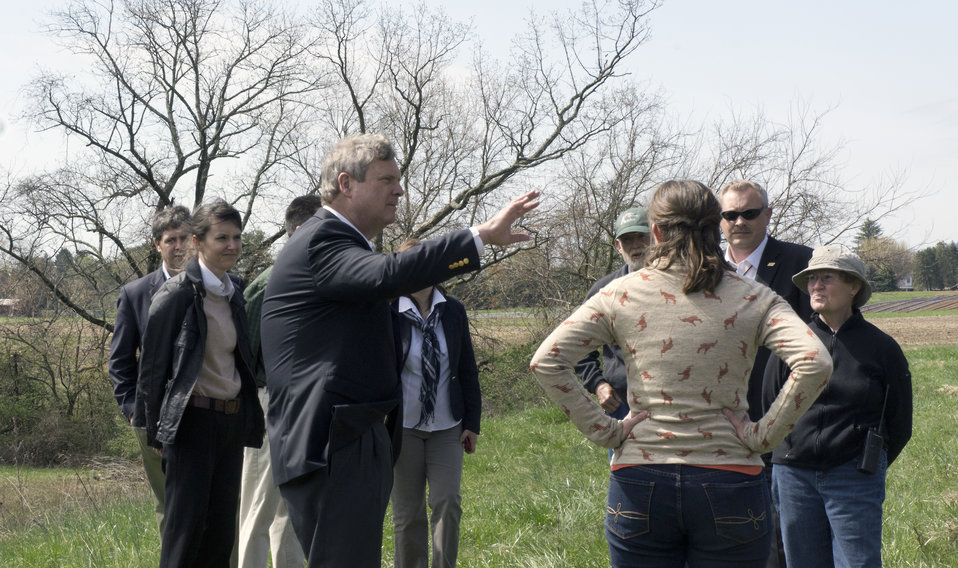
Agriculture Secretary Tom Vilsack visits the Kuhn Family Farm in Pennsylvania to highlight U.S. Department of Agriculture (USDA) conservation practices on Thursday, May 1, 2014.